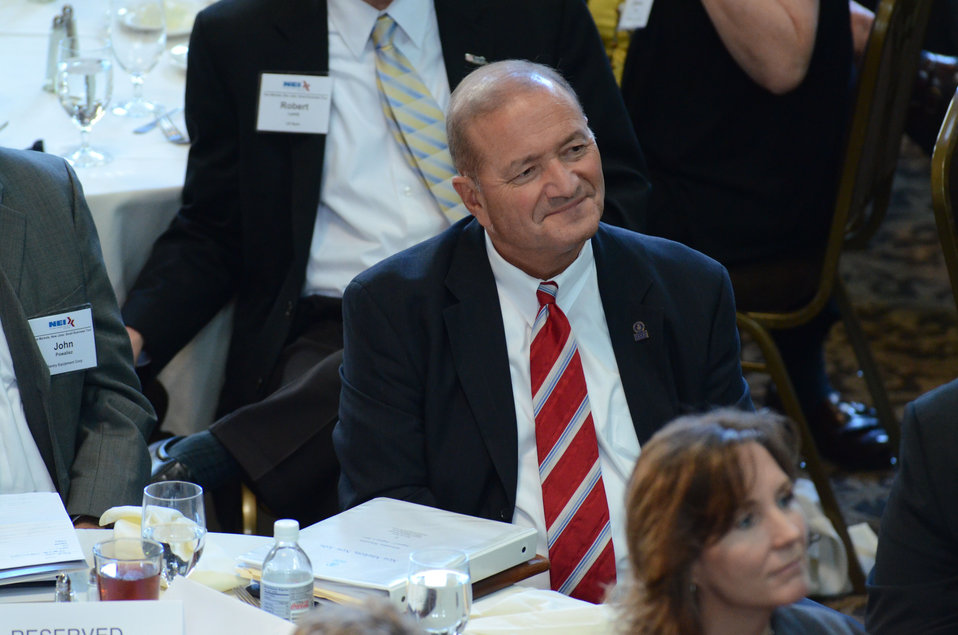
Members of the audience listen to Agriculture Secretary Tom Vilsack speak at the National Export Initiative (NEI) Small Business Tour in Milwaukee, WI, on Wednesday, August 3, 2011. An important goal of the NEI is to provide additional assistance to small and medium-sized businesses, which are major drivers of job creation. The NEI is assisting small and medium-sized businesses win more foreign government contracts, find buyers worldwide, participate in more trade missions and trade shows, receive more export financing, and learn new ways to sell products and services overseas.